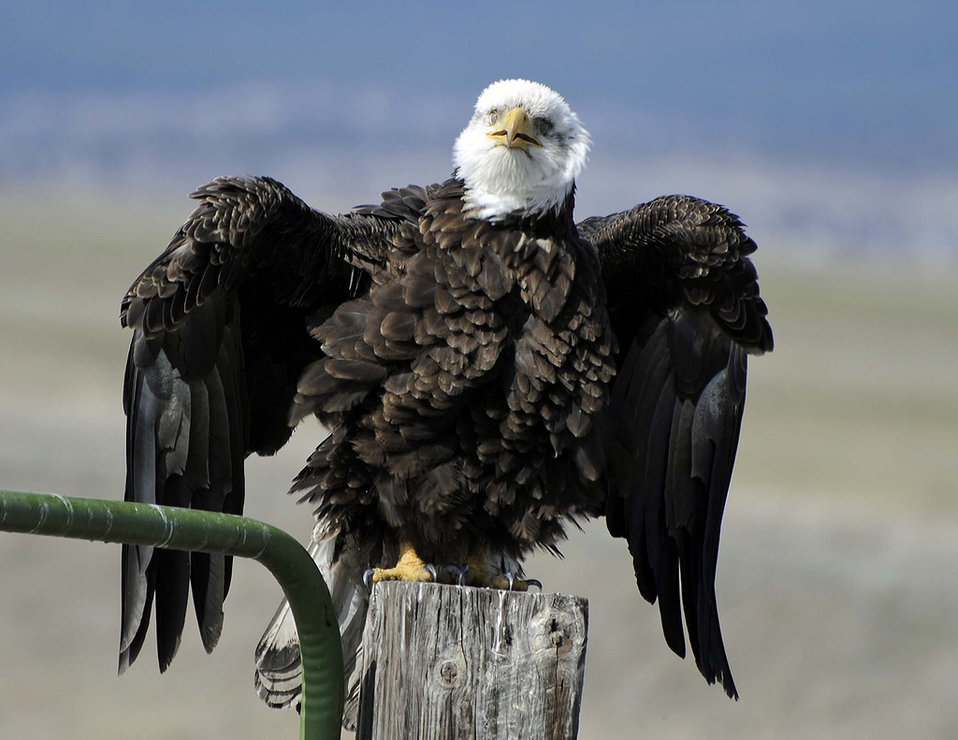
Bald Eagle

A bald eagle rests upon a fence post stretching its wings.